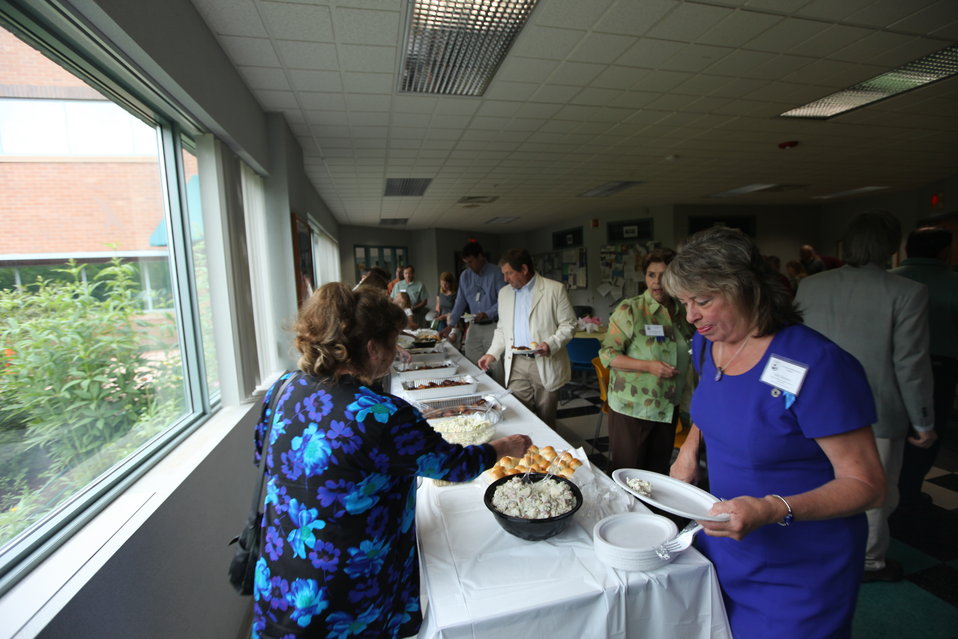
Northeast Region Employee Appreciation Awards

Luncheon